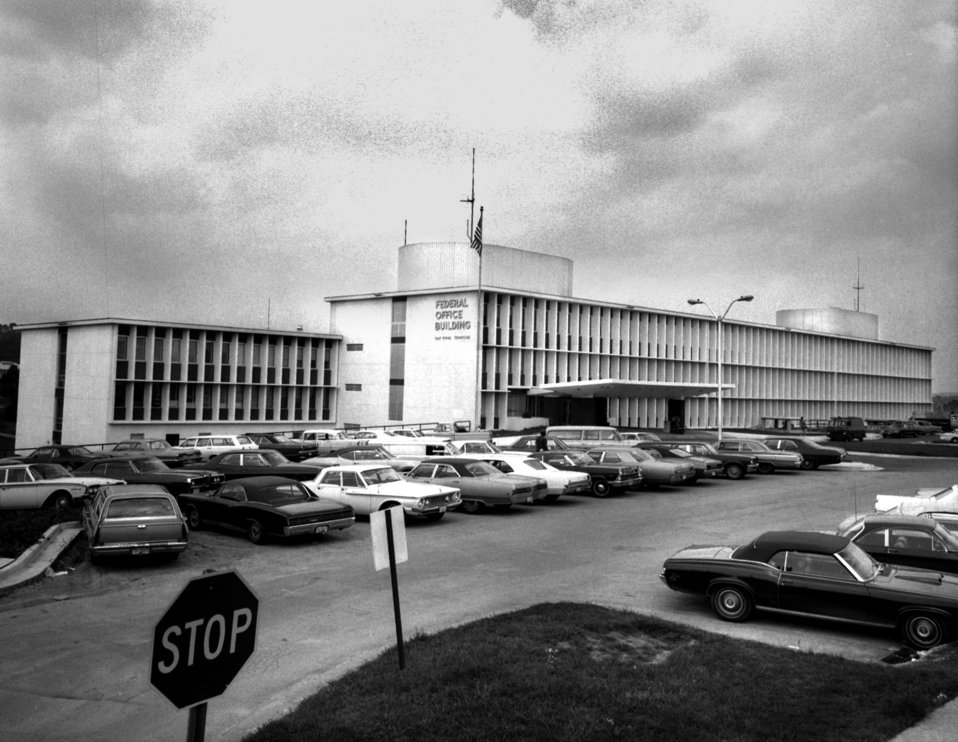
Federal Office Bldg. in Oak Ridge

70-264e DOE photo by Frank Hoffman Oak Ridge Tennessee Sept. 1970